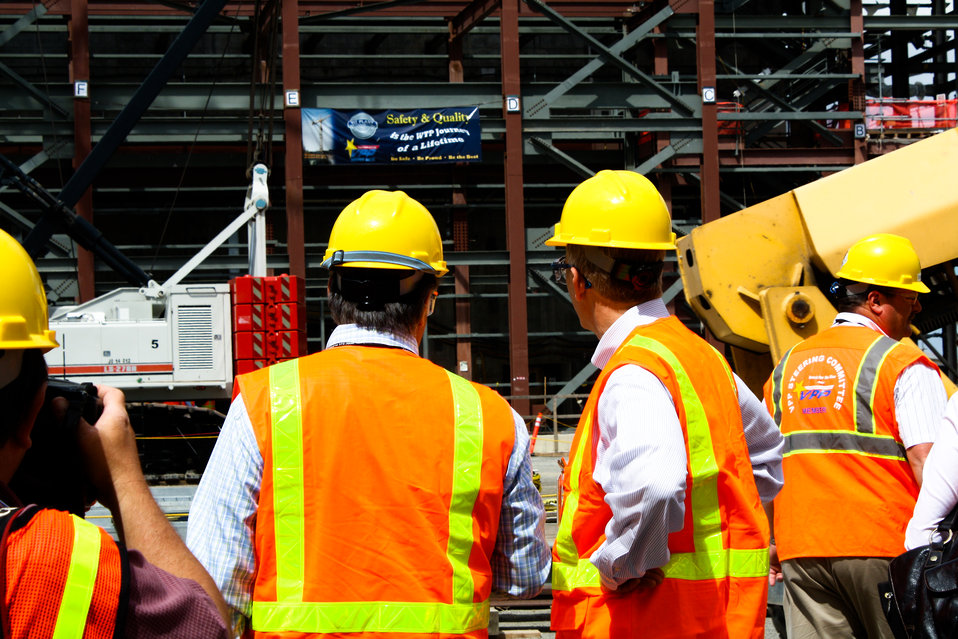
Poneman Vit Plant Visit 06-14-10-23